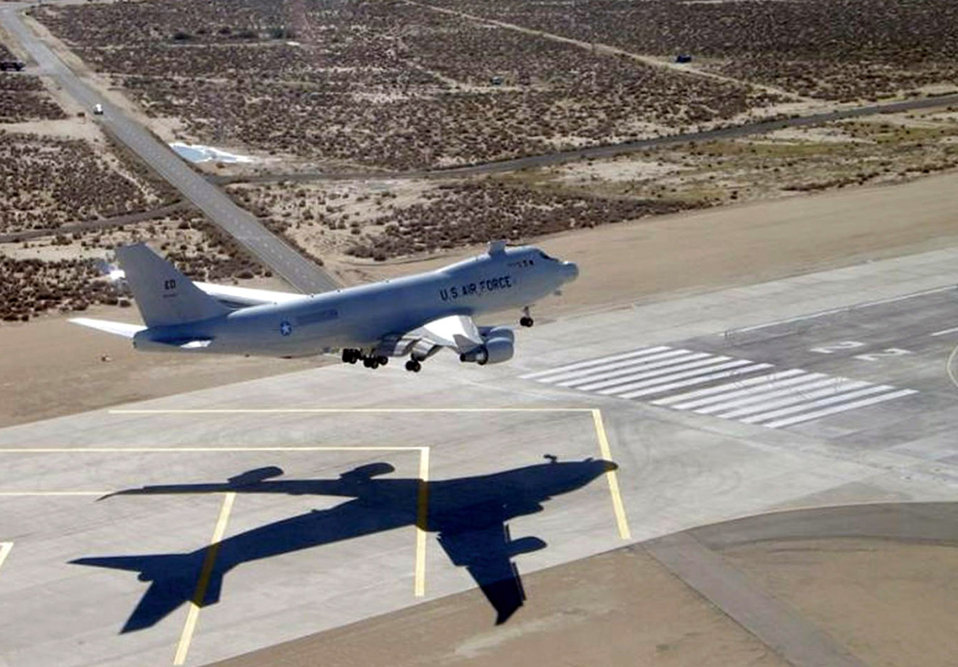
Airborne laser testbed successful in lethal intercept experiment

The YAL-1A, a modified Boeing 747-400F known as the Airborne Laser, lands at Edwards Air Force Base, Calif. The Airborne Laser Testbed successfully destroyed a boosting ballistic missile Feb. 11 over the Pacific Ocean.